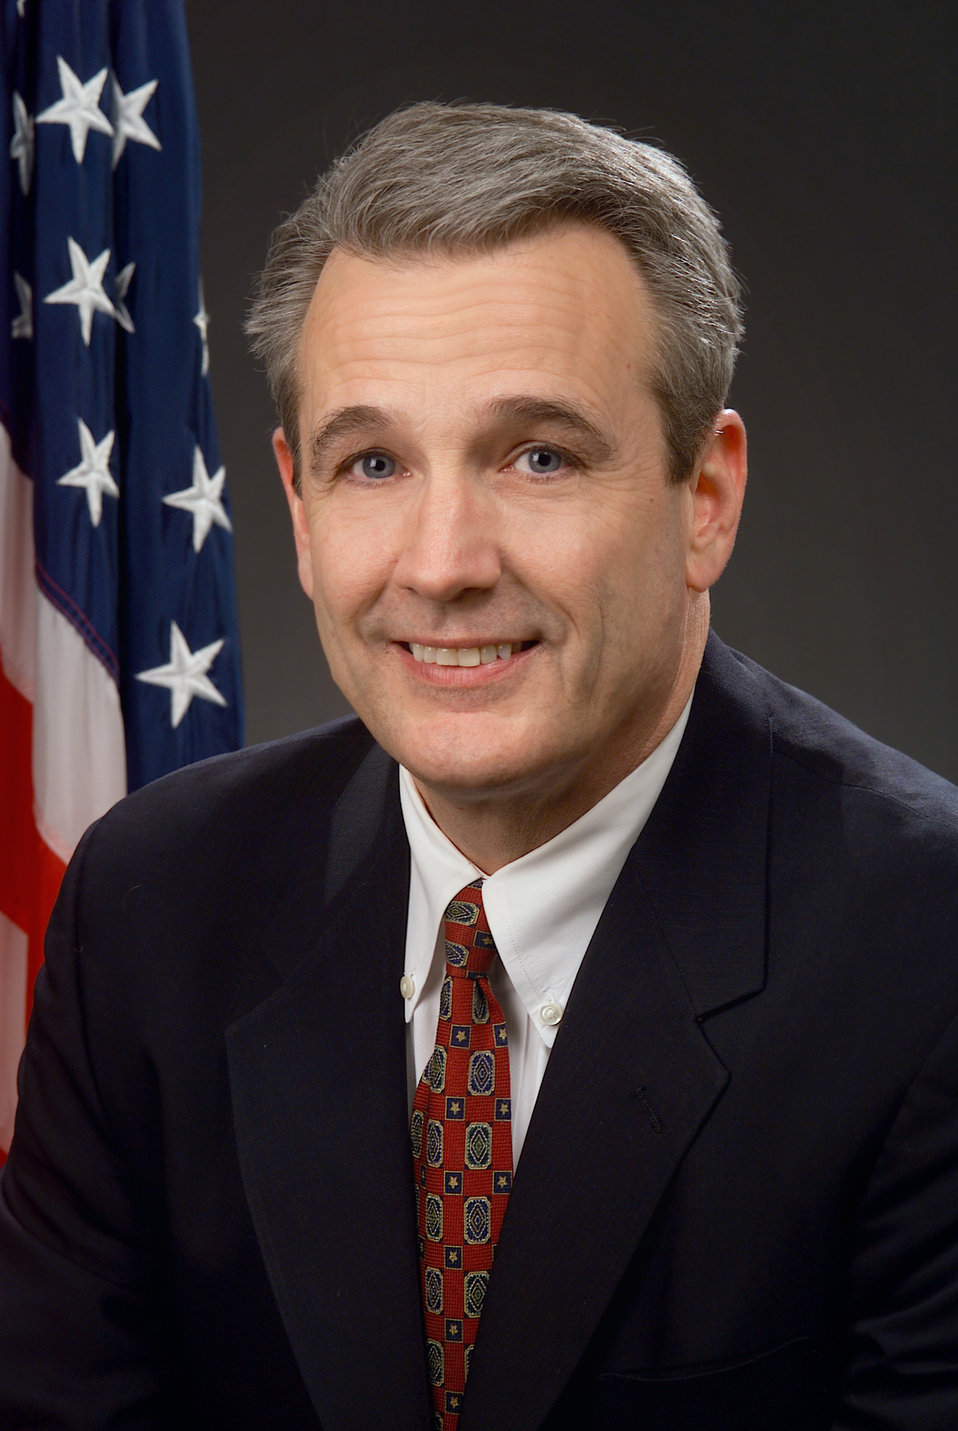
This is William Gimson of the Centers for Disease Control and Prevention, Atlanta, Georgia.